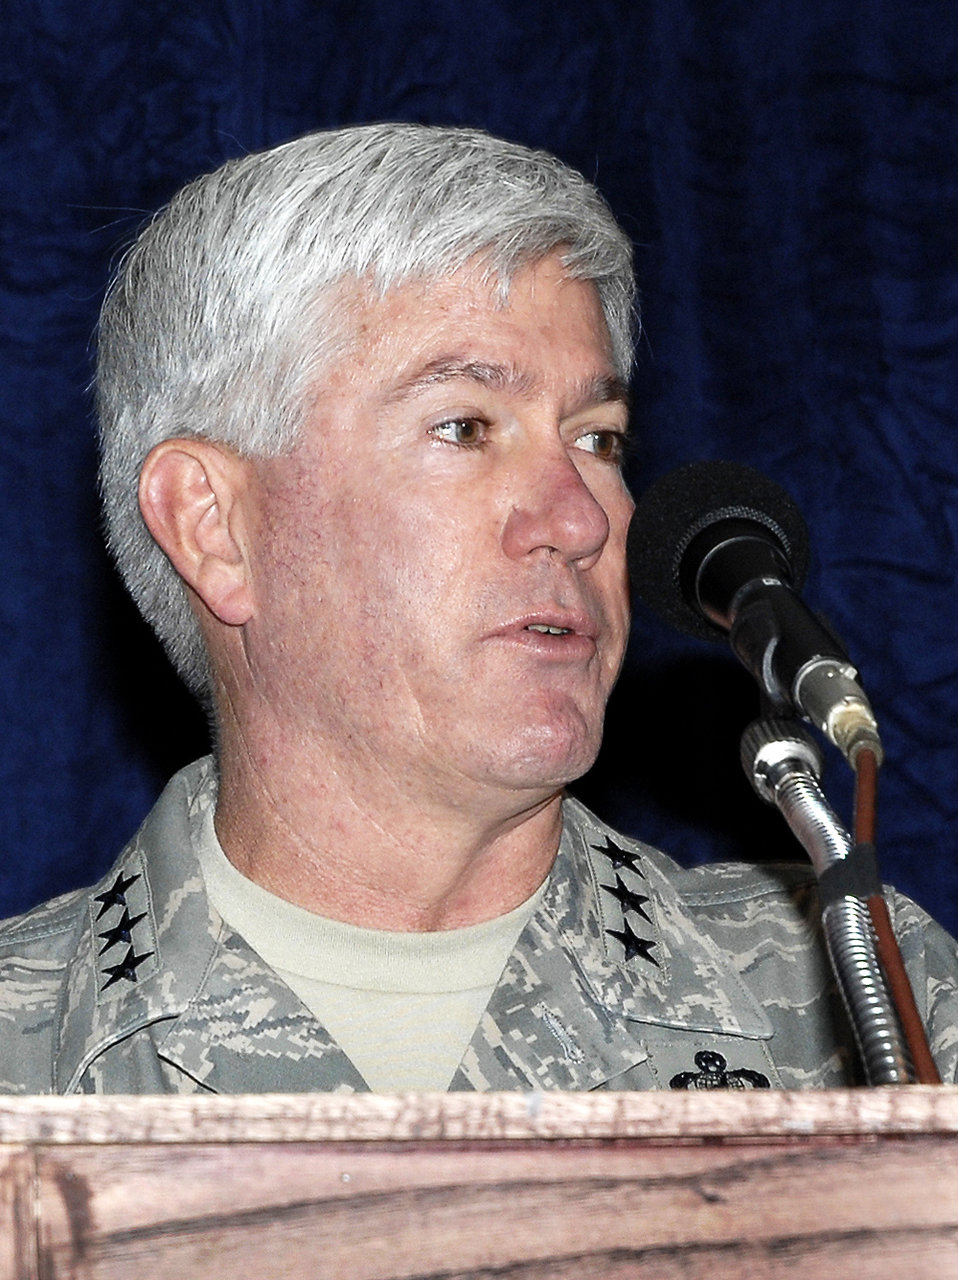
Changes ahead for Air Force acquisition

Lt. Gen. Thomas J. Owen addresses Air Force Materiel Command and defense industry leaders at an Air Force Association Technology Symposium Sept. 3, 2009, at Wright-Patterson Air Force Base, Ohio. General Owen is the Aeronautical Systems Center commander.